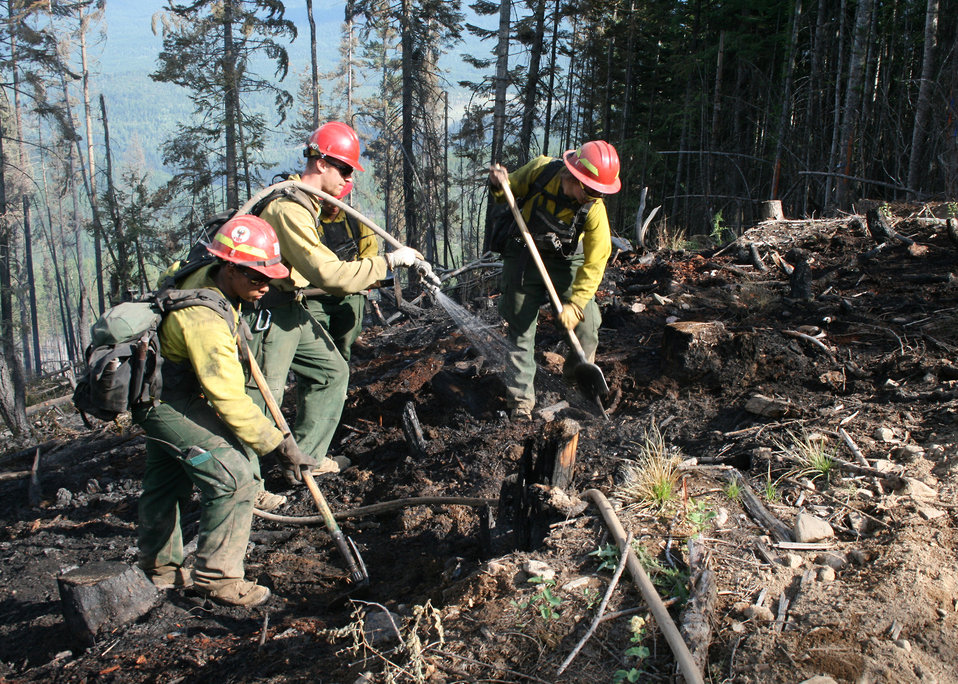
Firefighters supported by three fire engines, two helicopters, two water tenders, a dozer and an air tanker battled to contain the 90 acre Rogers Fire located on Mt. Rogers five miles west of Aladdin, WA on the Colville National Forest. Firefighters worked under adverse conditions with steep terrain and gusting winds to reduce the loss of timber and protect the Rogers Mountain Trail. The Rogers Fire began on Aug. 9, 2011 and was controlled by Aug. 19, 2011 with mop up crews ensuring that no flare-ups occurred. Colville National Forest has 1.1 million acres in northeastern Washington and includes the Kettle River, Selkirk Mountain ranges, and the upper reaches of the Columbia River.